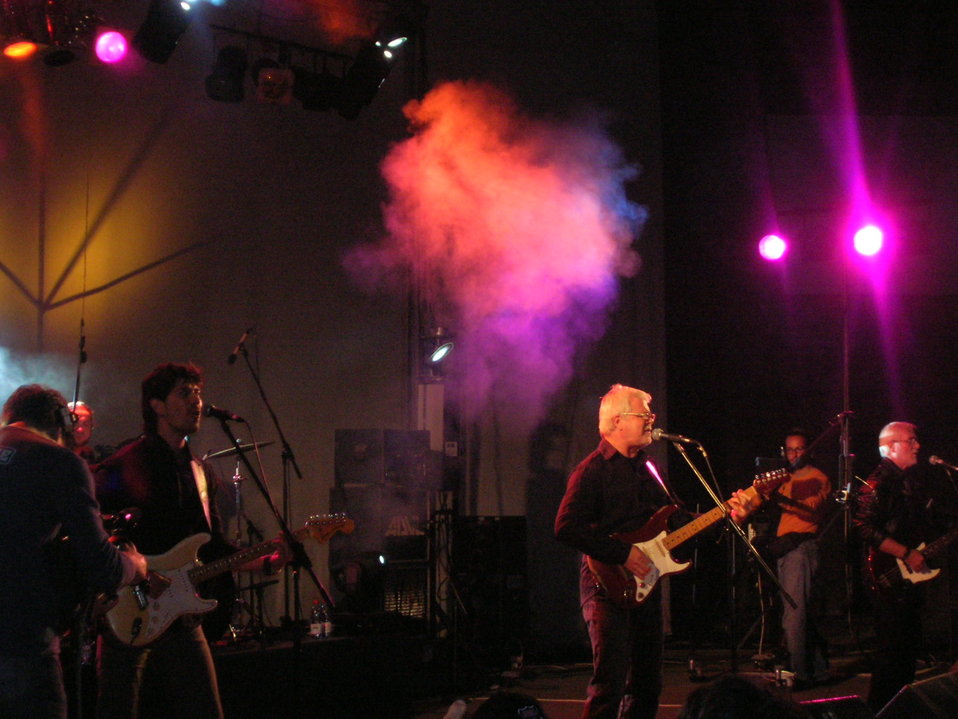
YU Grupa performing live at Nisomnia music festival in 2007